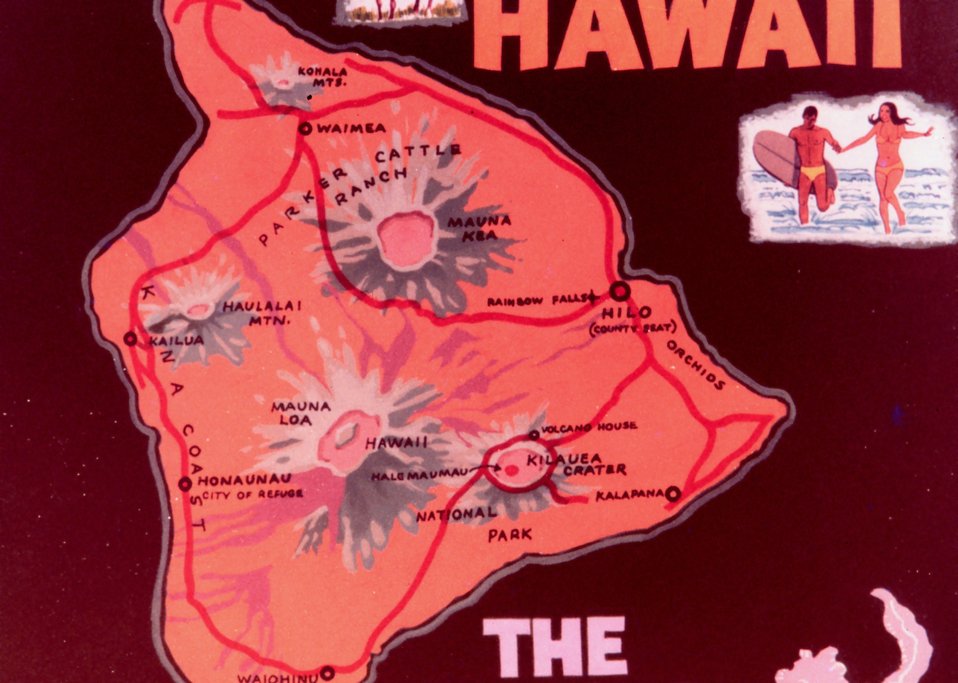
Map of the Big Island of Hawaii